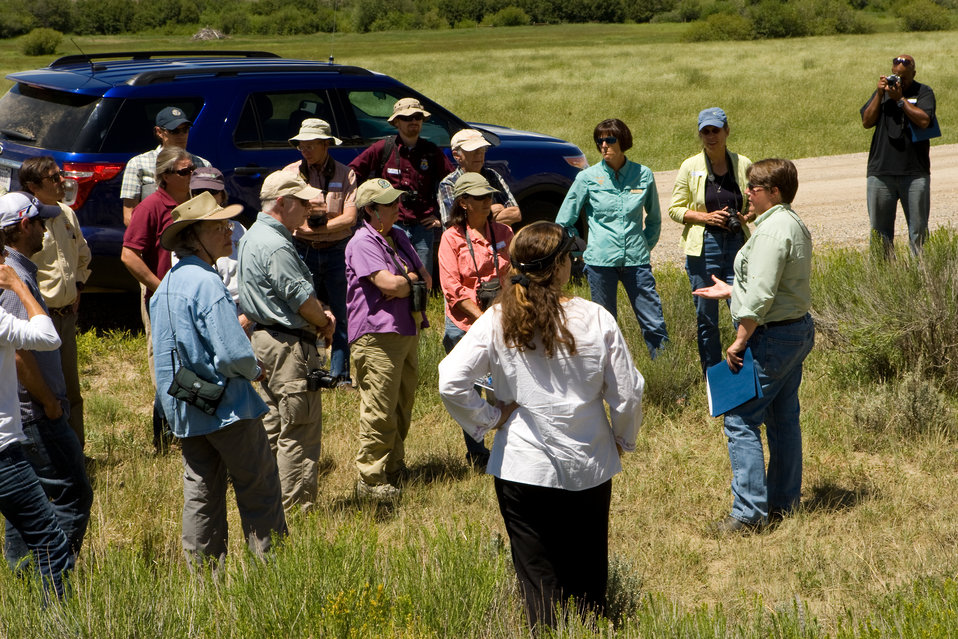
Colorado Rare Plant Conservation Initiative

The Colorado Rare Plant Conservation Initiative (RPCI) is a partnership of 23 statewide and regional agencies, private organizations, and academic institutions working to conserve 121 rare plants in Colorado. As part of these efforts the group developed the Colorado Rare Plant Conservation Strategy, developed Best Management Practices to reduce energy development impacts, addressed climate change, and developed focused strategies for the conservation of individual species at eight priority landscapes. The group has also worked to coordinate volunteer efforts for plant conservation across the state.